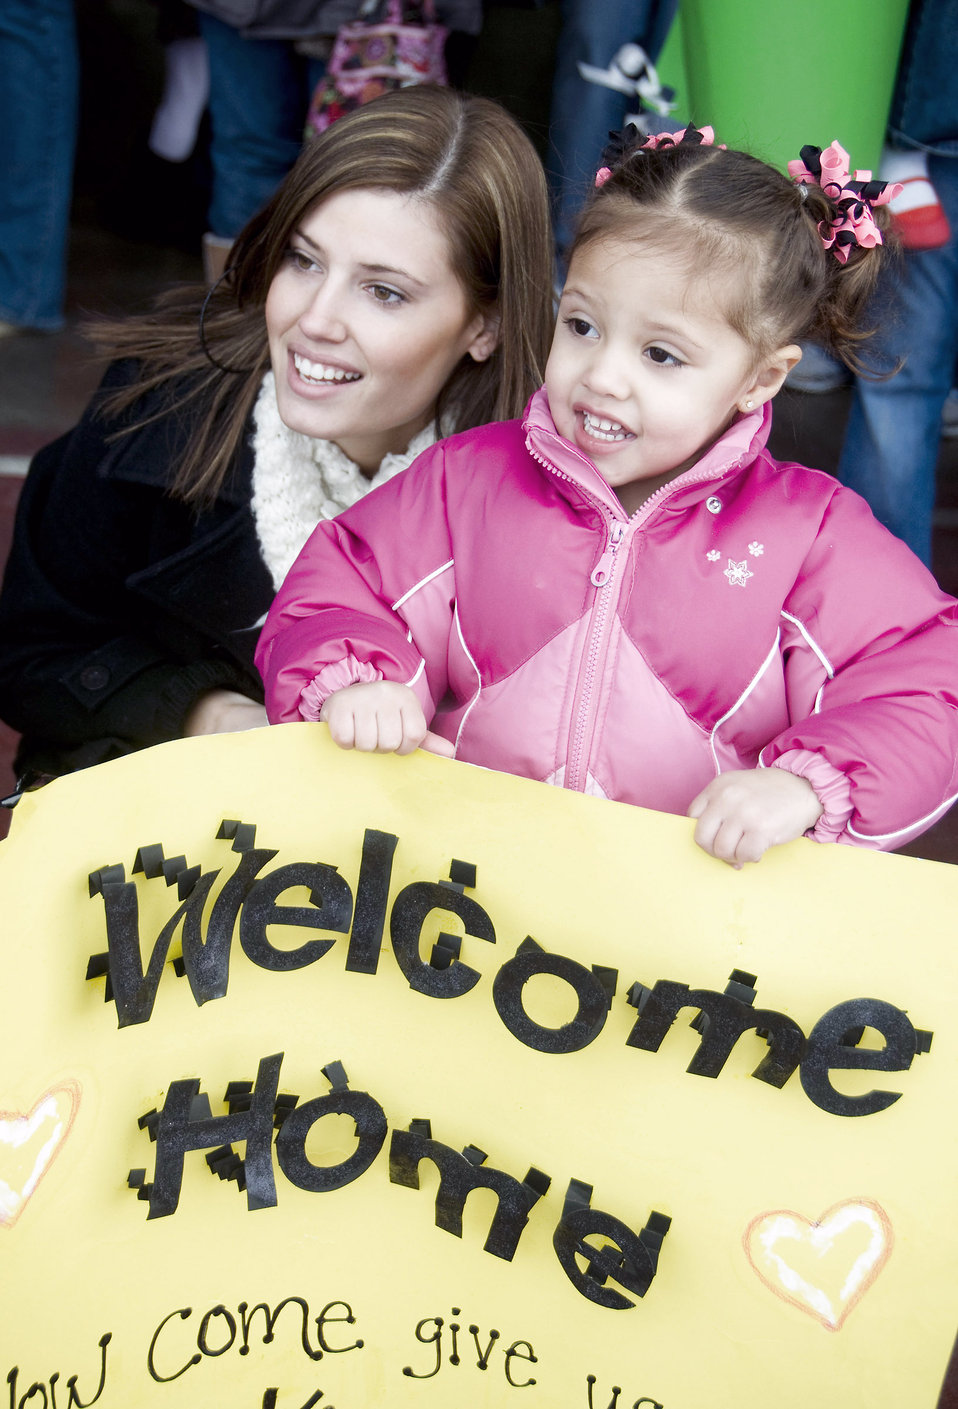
Misawa officials welcome home 300 deployed Airmen

Jill and Jada Banks await the arrival of Senior Airman Corey Banks March 1 at Misawa Air Base, Japan. Airman Banks was one about 300 Airmen to return to Misawa AB following a deployment to Joint Base Balad, Iraq.